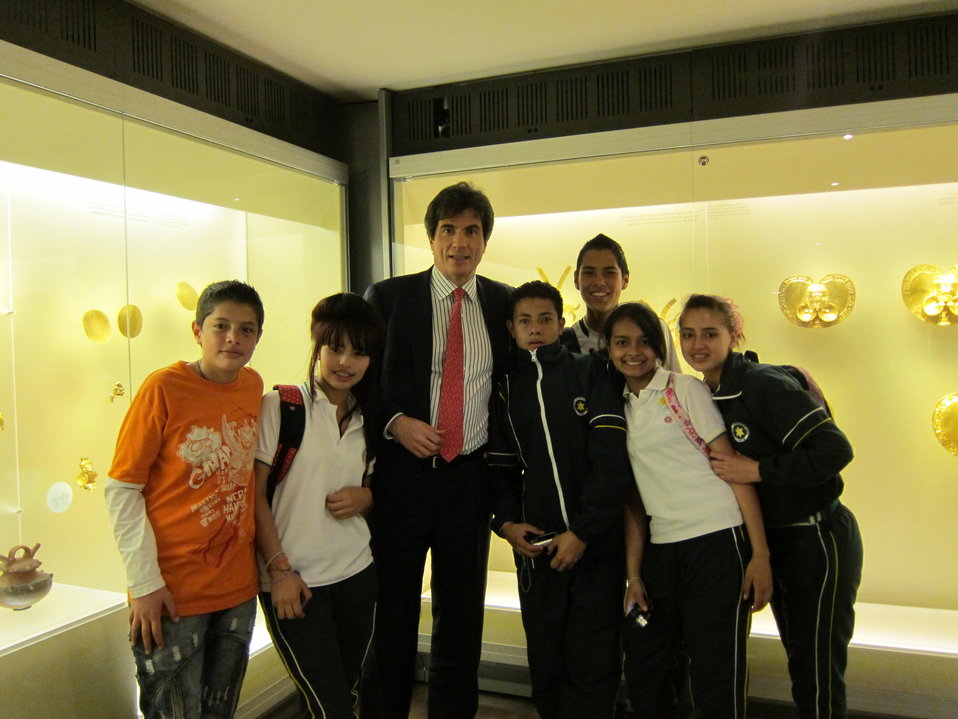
Assistant Secretary Fernandez Meets With Local Students in Colombia

Assistant Secretary of State for Economic and Business Affairs Jose Fernandez meets with local students at El Museo del Oro (The Gold Museum) in Bogota, Colombia, on February 15, 2012.